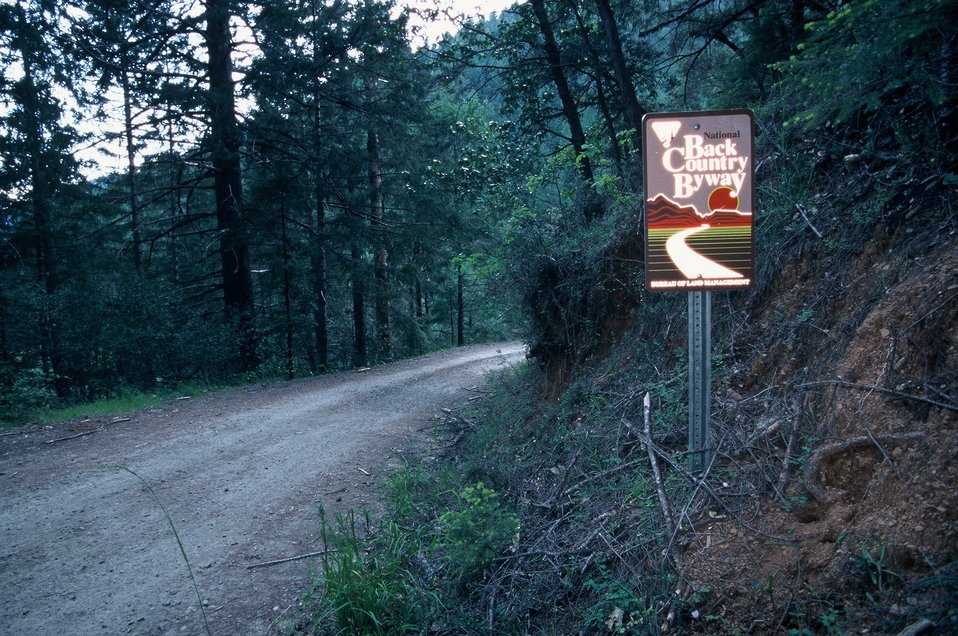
Wild section of the Rogue River from Grave Creek to Foster Bar May 19 to May 22.